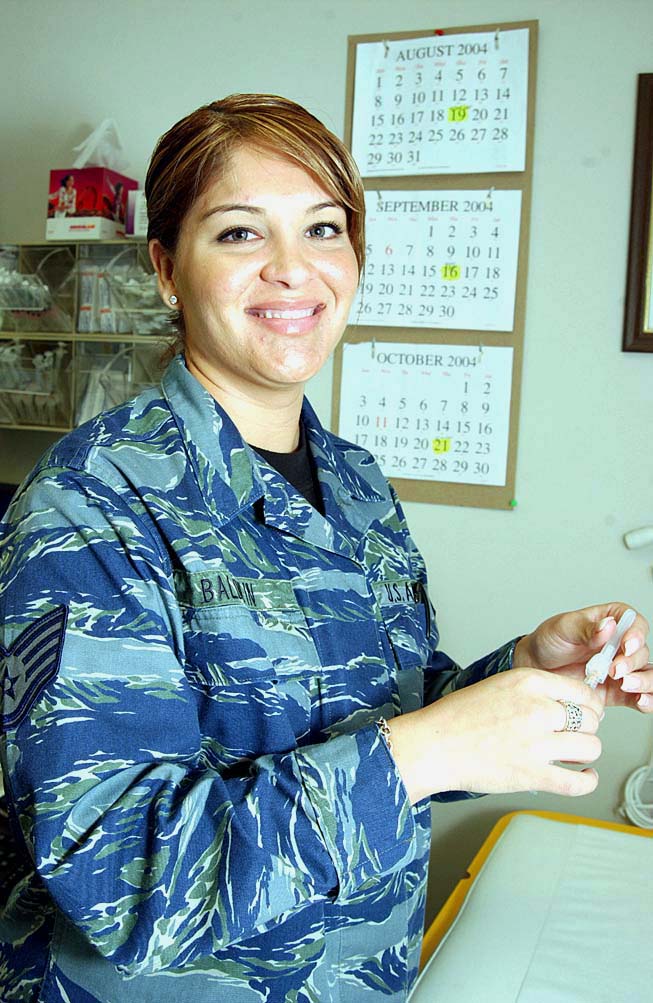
Airman likes being part of bigger picture

MOODY AIR FORCE BASE, Ga. -- Staff Sgt. Georgina Baldwin, wearing the proposed utility uniform, said she takes pride in knowing that she is part of the team that takes care of the active-duty Airmen defending America. She is an allergy and immunization technician with the 347th Medical Operations Squadron here.